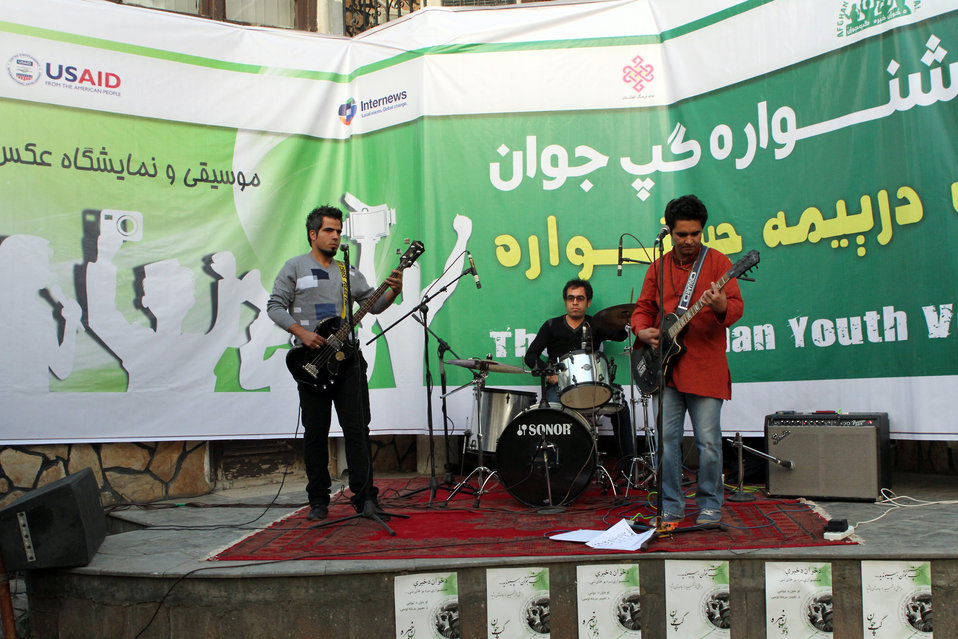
Afghan Youth Festival

Internews - USAID